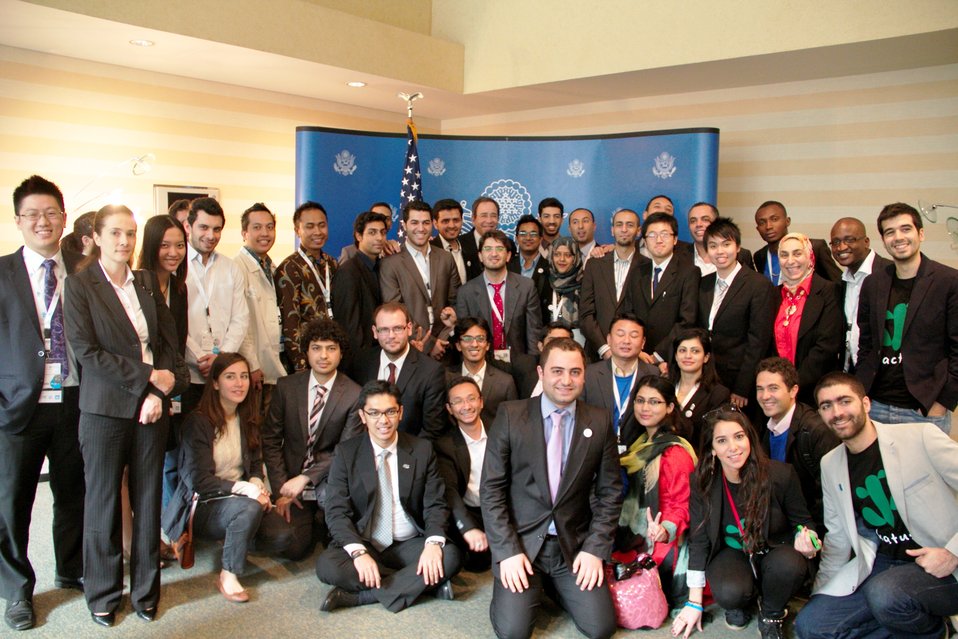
Deputy Secretary Nides With Young Entrepreneurs

Deputy Secretary of State Thomas Nides meets with young entrepreneurs from the State Department-sponsored Global Innovation through Science and Technology (GIST) initiative on the sidelines of the Global Entrepreneurship Summit in Dubai, United Arab Emirates, December 12, 2012.